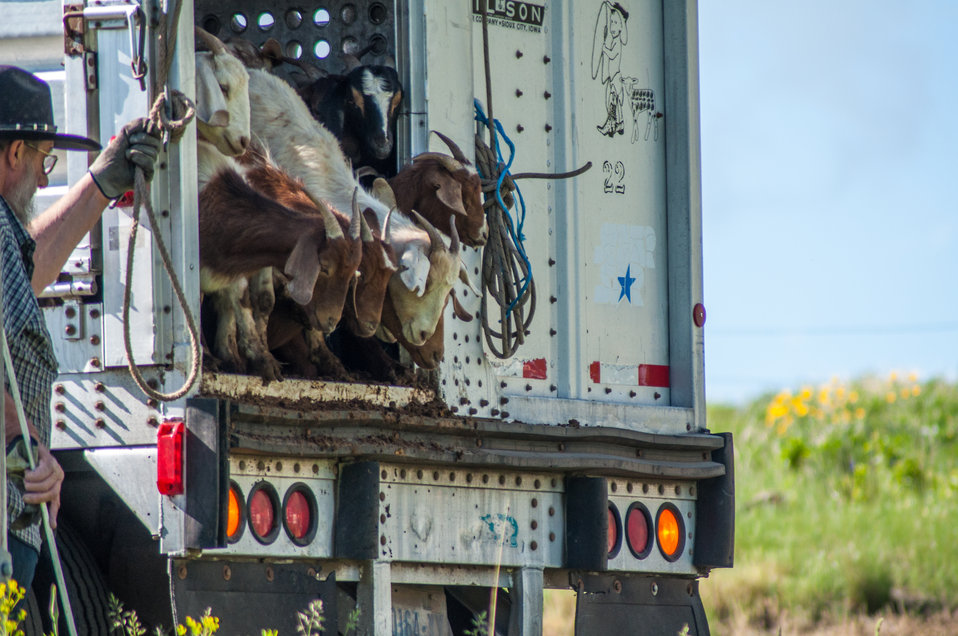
Goat landing on Bozeman Fish Technology Center

On June 8 at 5:00 p.m., 409 yearling domestic goats were off-loaded on the Bozeman Fish Technology Center (BFTC) campus. Thus begins a 3-4 year project of monitored targeted grazing and applications of friendly insects to control noxious weeds and manage brush overgrowth on property of the U.S. Fish and Wildlife Service BFTC.

Purposes of this effort are to reduce the presence of undesirable vegetation, promote restoration of native plants, and assist with fire protection by reducing burnable plant biomass.

The cooperative venture involves the U.S. Fish and Wildlife Service, Montana Outdoor Science School, Friends of the Bozeman Fish Technology Center, Gallatin Valley Land Trust, U.S. Forest Service, and Prescriptive Livestock Services. Integrated Weed Control is supplying the insects as an in-kind contribution to the project, and has applied insects on the BFTC’s 'hot spots' in previous years.